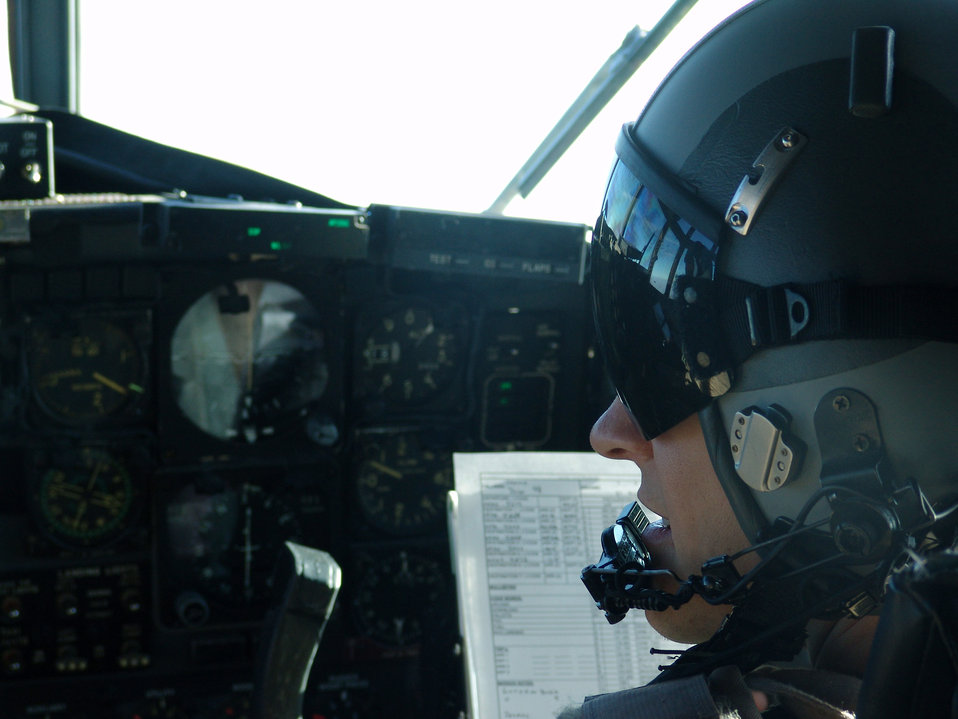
Check left

OVER IRAQ -- First Lt. Damon Overson scans the instrument panel in a C-130 Hercules during a flight into Iraq on Oct. 10. Pilots from the 746th and 386th Expeditionary Airlift Squadrons at a forward-deployed location fly daily missions supporting operations Iraqi Freedom and Enduring Freedom. Lieutenant Overson is assigned to the 746th EAS.